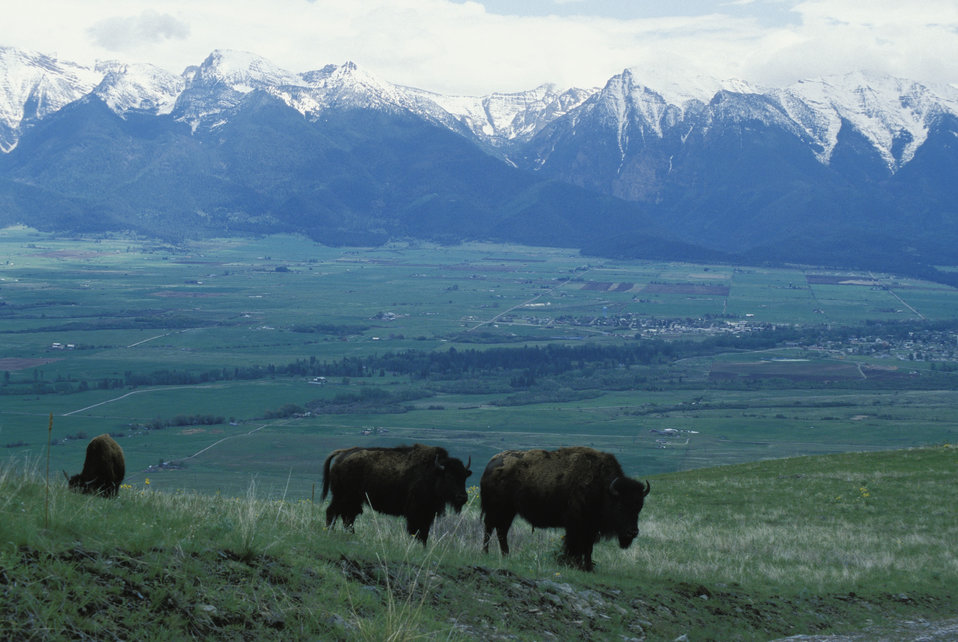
Bison

Three bisons grazing on the range with snow-capped mountains in the background